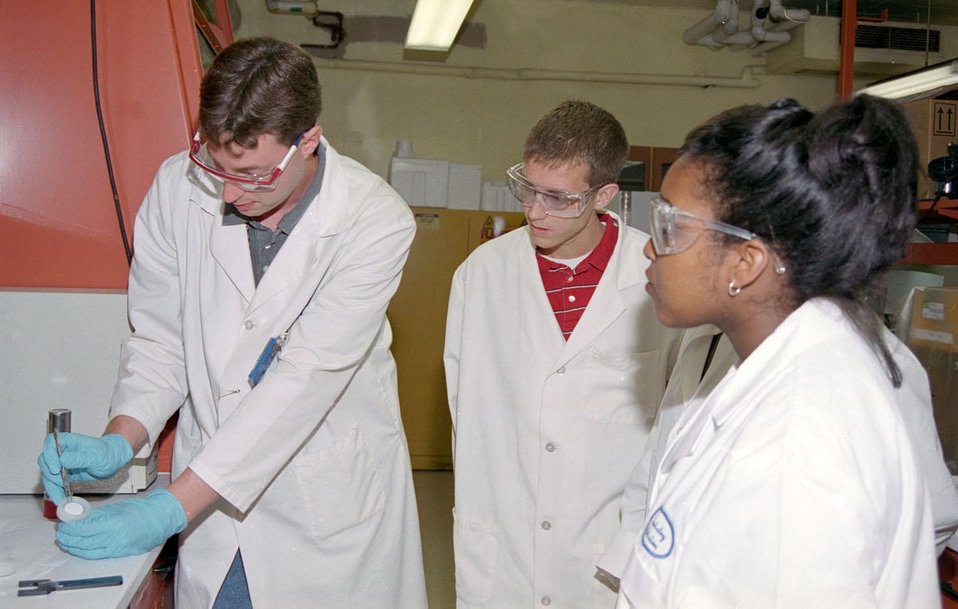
GRADUATE STUDENTS LEARNING ABOUT SELF-ASSEMBLY PEPTIDES SYNTHESIS AT ARGONNE NATIONAL LABORATORY.

GRADUATE STUDENTS GET FIRST HAND LABORATORY EXPERIENCE WHEN THEY PARTICIPATE IN ARGONNE'S NANOSCIENCE RESEARCH SUMMER SCHOOL.